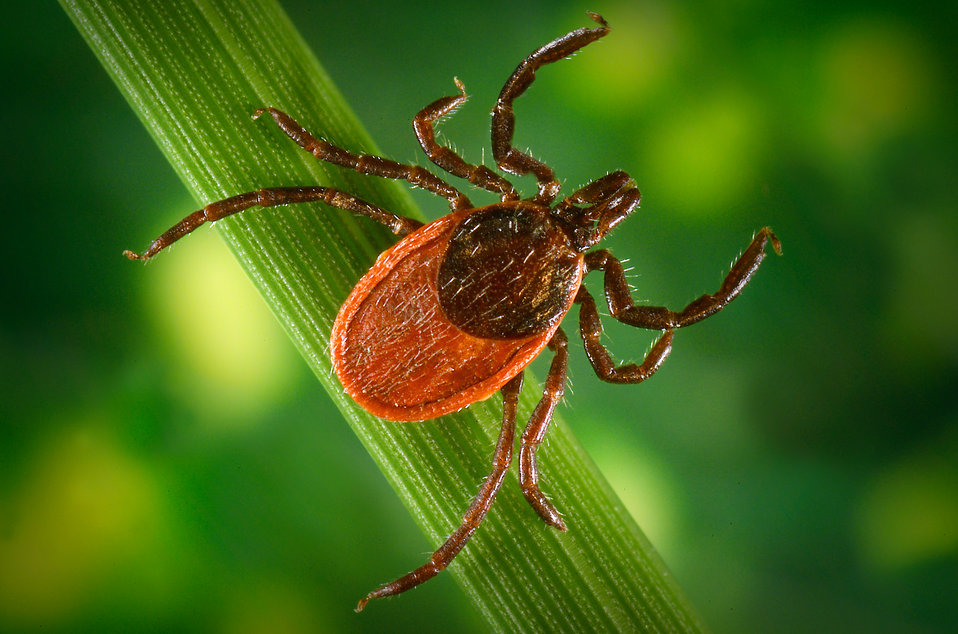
The blacklegged ticks, I. pacificus, (depicted here), and I. scapularis, are known vectors for the zoonotic spirochetal bacteria Borrelia burgdorferi, which is the pathogen responsible for causing Lyme disease. The ticks, inoculated with the bacterium when they bite infected mice, squirrels and other small animals, subsequently pass the pathogens to their human victims when they obtain a blood meal.B. burgdorferi bacteria can infect several parts of the body, producing different symptoms at different times. Not all patients with Lyme disease will have all symptoms, and many of the symptoms can occur with other diseases as well. If you believe you may have Lyme disease, it is important that you consult your health care provider for proper diagnosis.